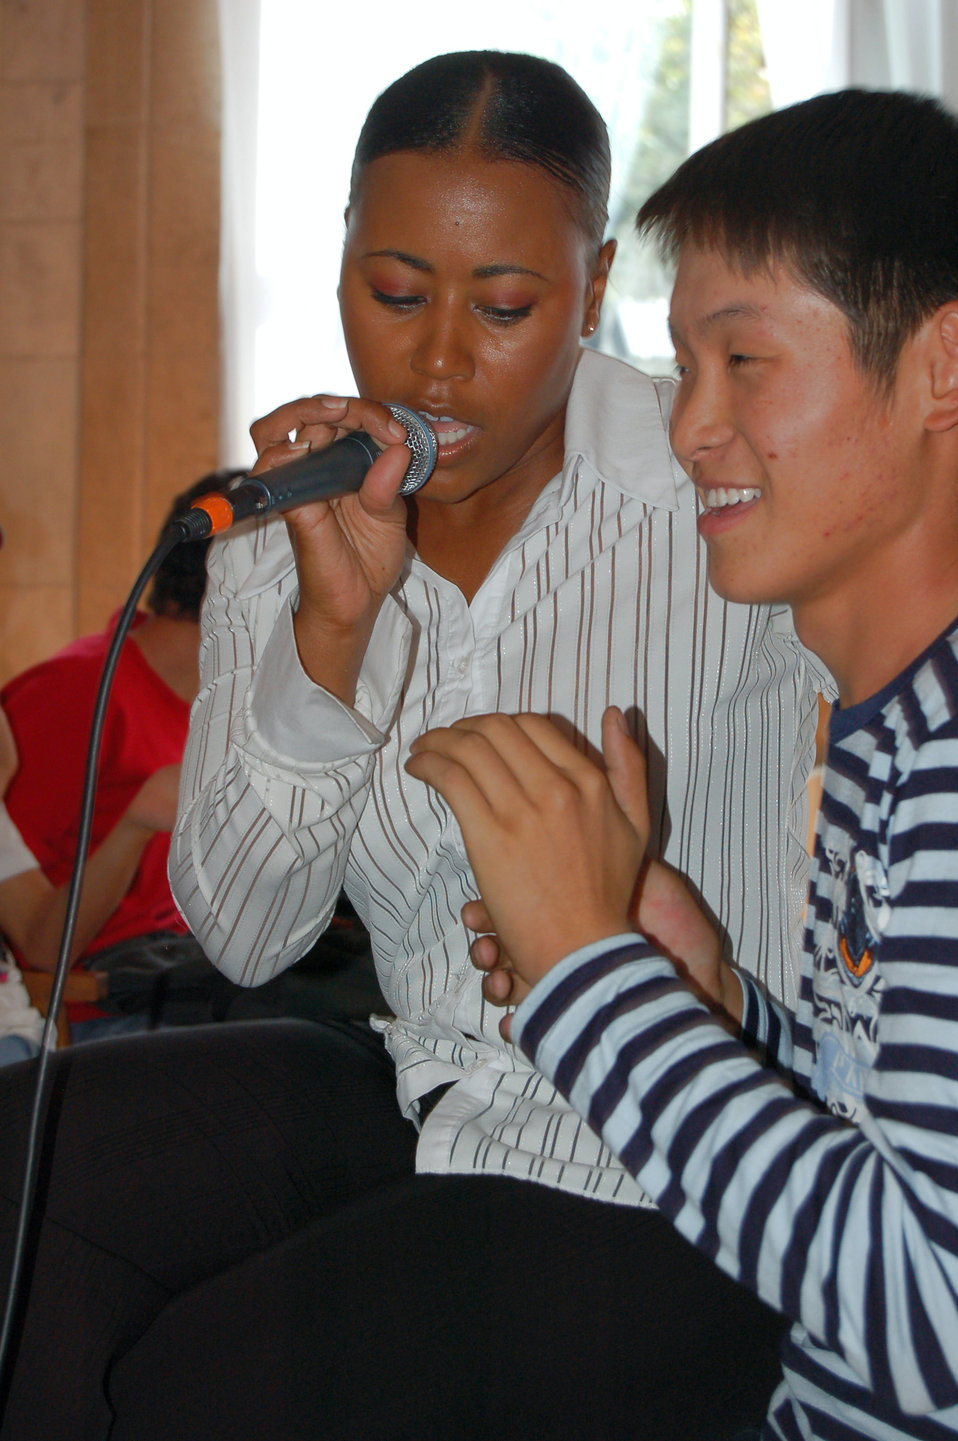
Band members, Kyrgyz citizens share culture through music

Master Sgt. Regina Coonrod belts out a tune for Kyrgyz fan Sept. 10 at the Bishkek Musical College in Krygyzstan. During their eight-day tour at Manas, the U.S. Air Forces Central Band Yuma performed 10 concerts at local schools, villages and orphanages, as well as on base for coalition servicemembers.